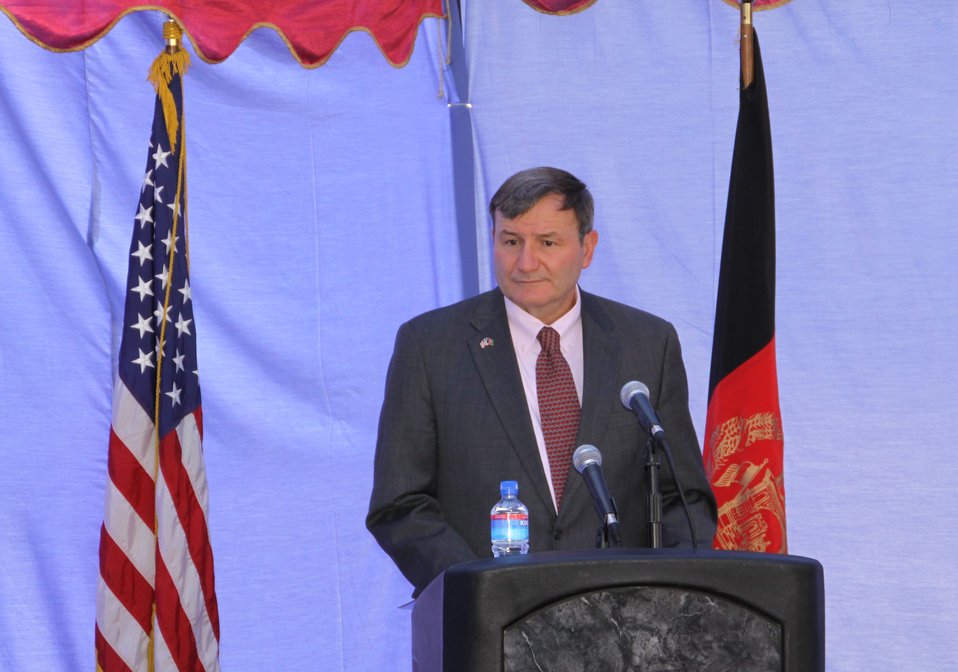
105 MW Tarakhil Power Plant Handover